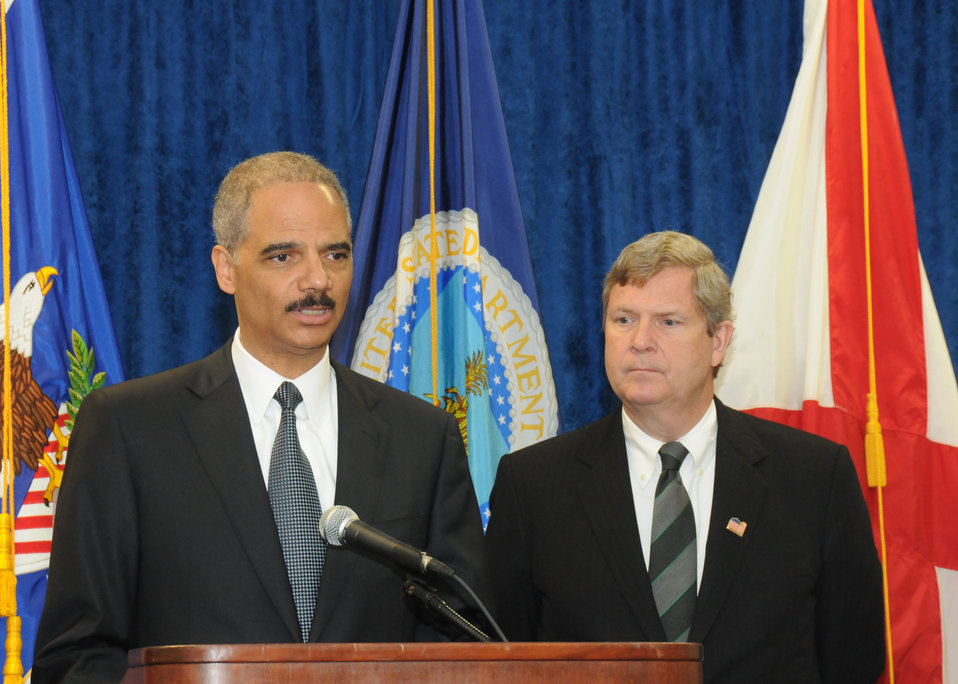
Attorney General Eric Holder speaks to the press after the early morning listening session of the U.S. Department of Justice and the U. S. Department of Agriculture ‘s “Agriculture and Antitrust Enforcement Issues in Our 21st Century Economy “ with poultry farmers at Alabama A & M University in Normal, AL, on Friday, May 21, 2010. Agriculture Secretary Tom Vilsack listens to the Atttorney General's remarks. USDA photo 10di1361-228.